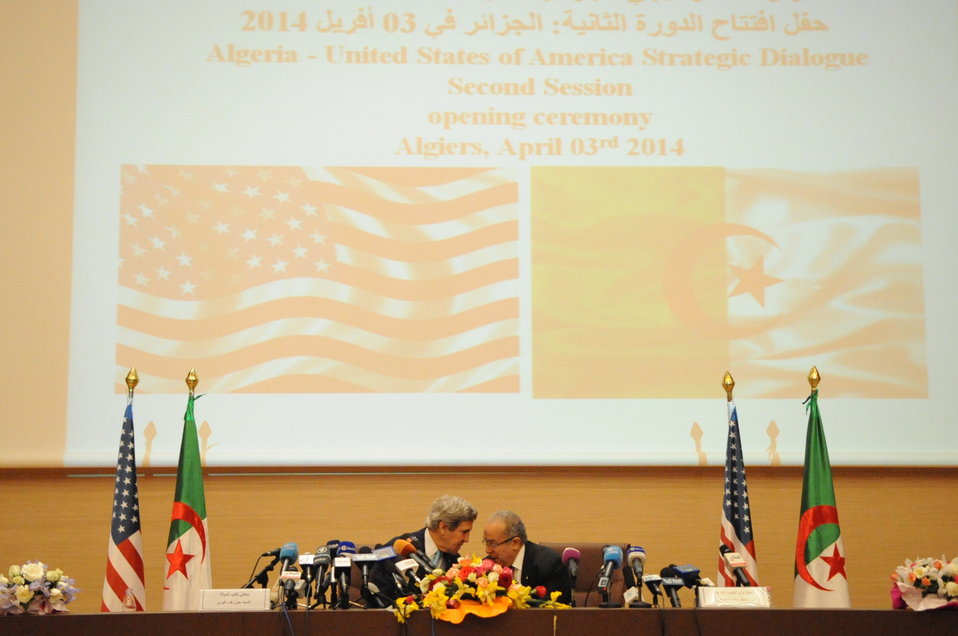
Secretary Kerry and Algerian Foreign Minister Hold Joint News Conference in Algiers

U.S. Secretary of State John Kerry and Algerian Foreign Minister Ramtane Lamamra hold a joint news conference after a Strategic Dialogue between their two countries at the Ministry of Foreign Affairs in Algiers on April 3, 2014.